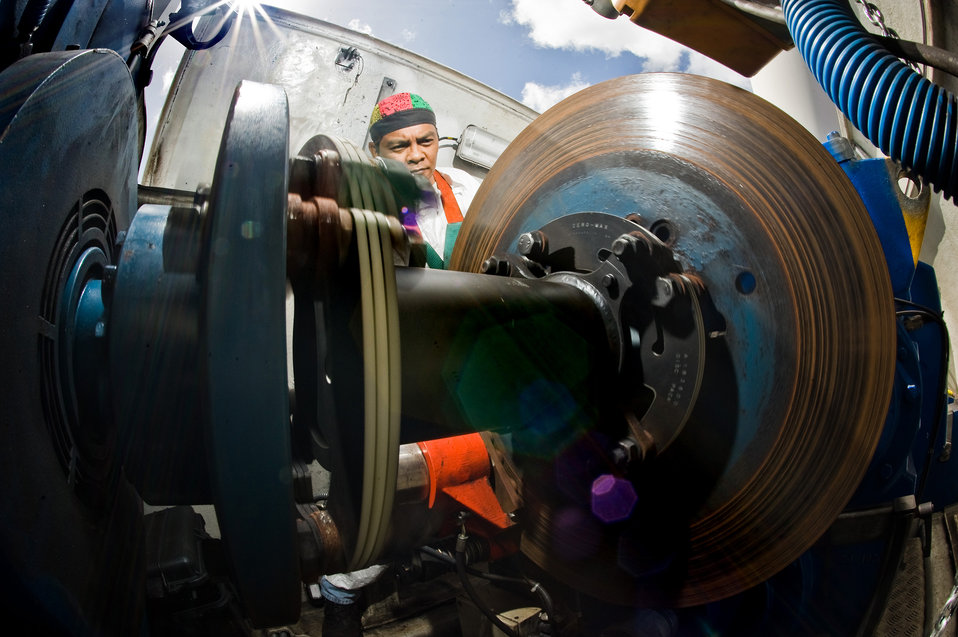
Ascension Island Green Way

Mr. Damien Cuello performs a operational check of a rotating 900kW wind turbine brake disk at 45th Operations Group Detachment 2, Ascension Auxiliary Airfield (AAF), South Atlantic Ocean on June 24, 2009.
The unit sits atop a 110 foot tower that holds the power generation portion of this 900kW wind turbine. It takes only a few seconds for the disk brake to stop the three-bladed 182 foot rotor from turning in the wind. This is part of the self sufficient, power,water and waste infrastructure of the base. Mr. Cuello is a power house operator/ mechanical associate with Computer Sciences Raytheon, responsible for maintenance of the 6-wind turbine facility. The wind turbines works in parallel with low-load diesel generators powering the airfield, Space Command sites and facilities, and a royal air force airfield facility. Ascension AAF's award winning self-sufficiency solutions also includes drinking water production and waste water treatment. The mission of Det. 2 is support of eastern range space launches by collecting and disseminating radar, telemetry and tracking data. Ascension island is 35 square miles in a remote island location midway between Brazil and Angola. The nearest country is Liberia - 1000 miles away.